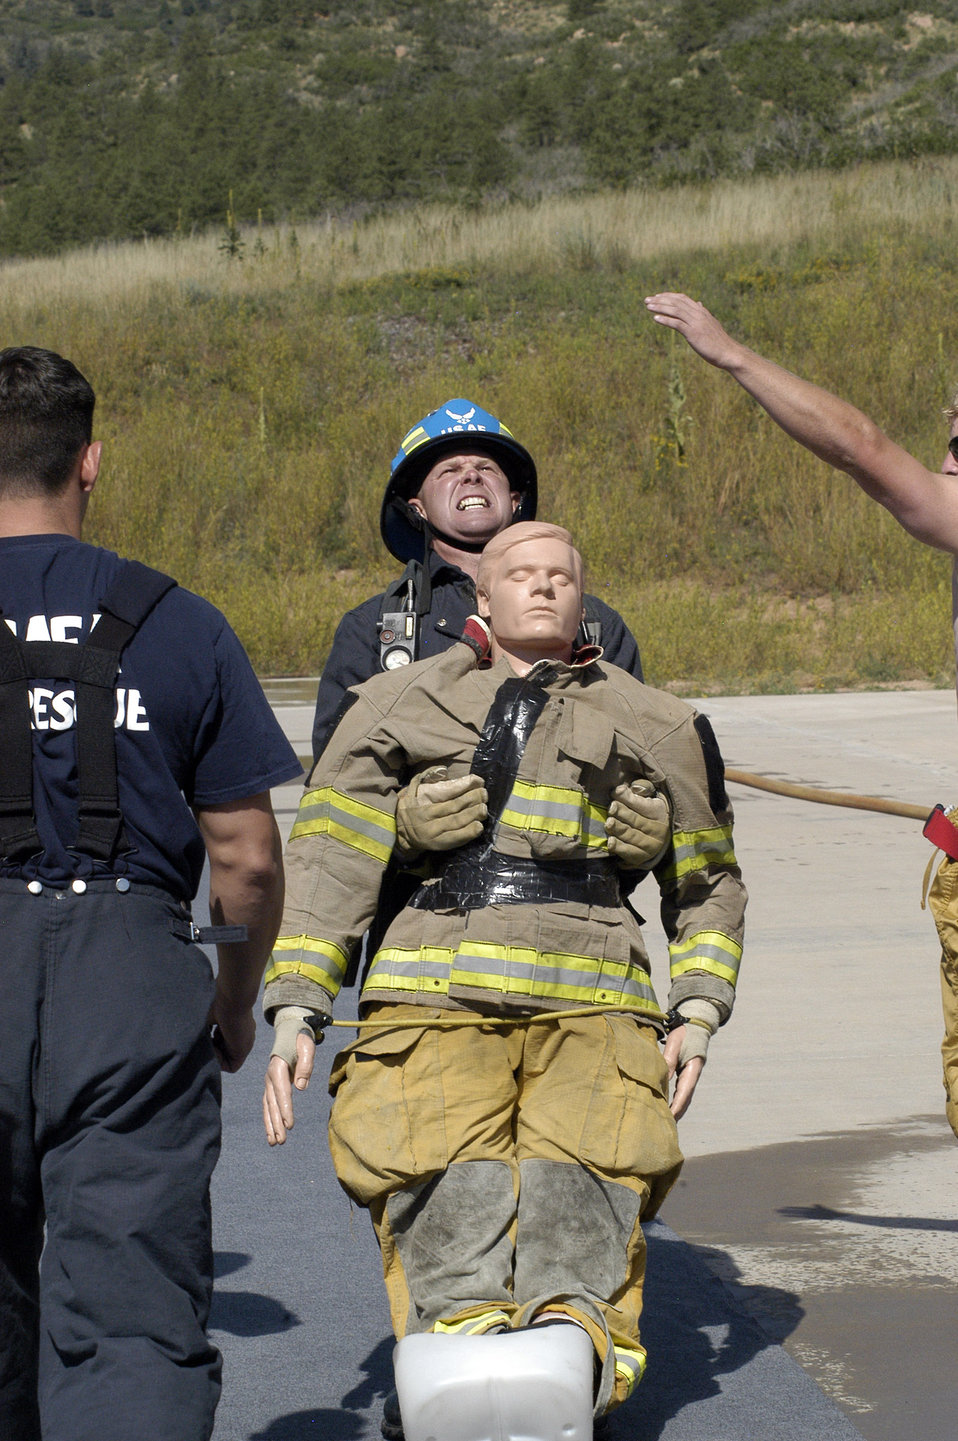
Dragging along

U.S. AIR FORCE ACADEMY, Colo. -- Roy Dalton trains for a dummy-drag event by pulling a 185-pound dummy 100 feet. The dummy drag is the fifth of five events which comprise the firefighter combat challenge here, and simulates real-world tasks of firefighting in a timed competition.